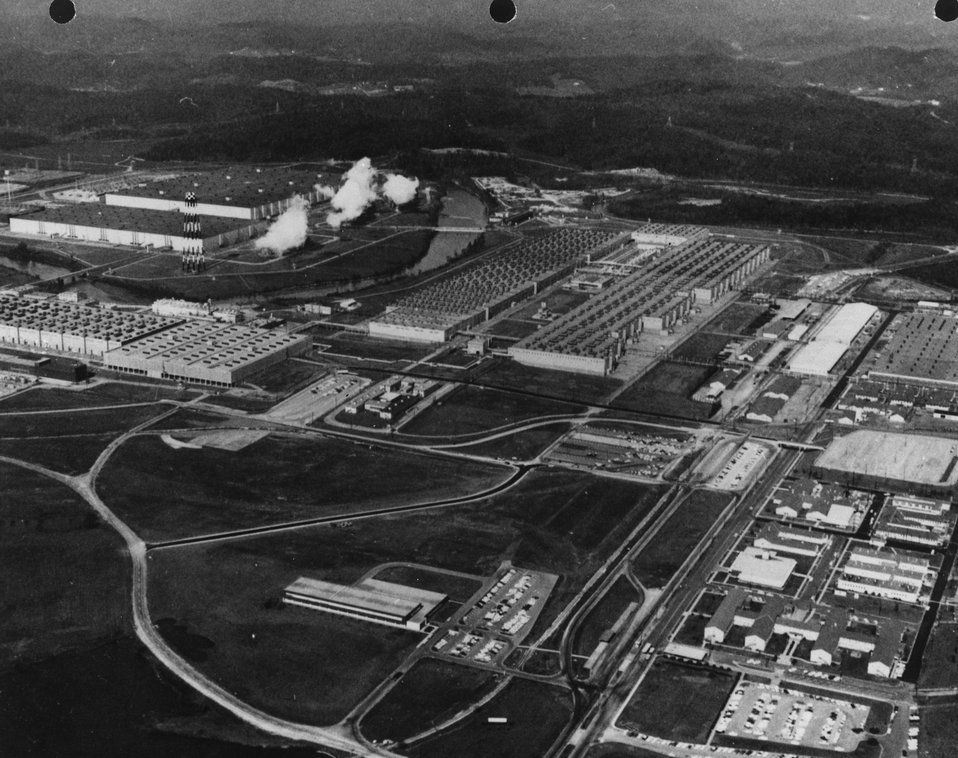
Aerial view of the gaseous diffusion plant at Oak Ridge, Tennessee. c. 1964